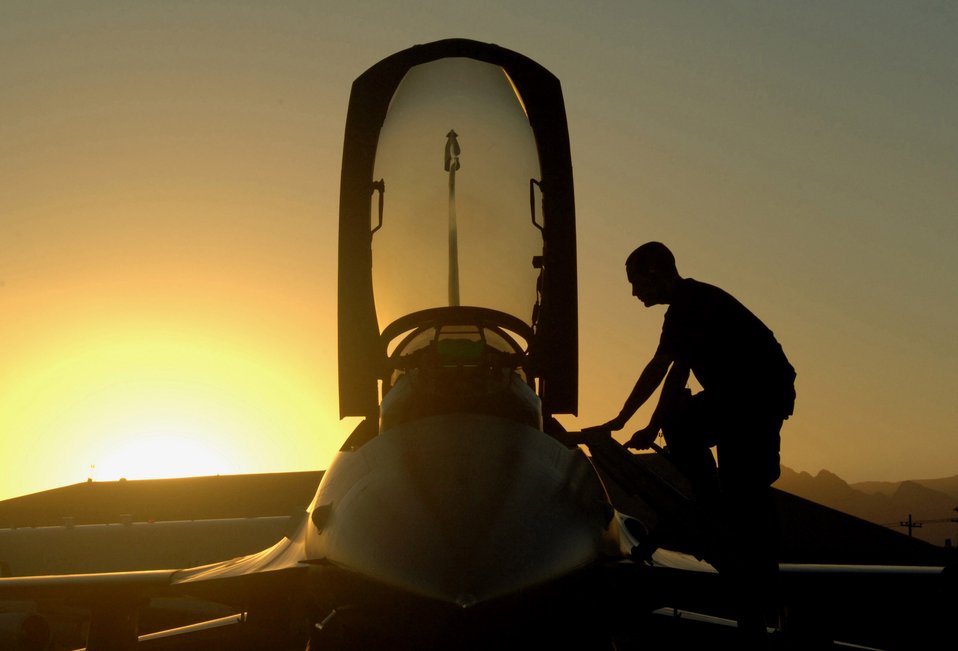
Falcons support Eagle school

Senior Airman Kyle Renbarger performs an F-16 Fighting Falcon post flight inspection Oct. 18 at Nellis Air Force Base, Nev. Airman Renbarger is a 63rd Fighter Squadron crew chief from Luke AFB, Ariz. The 63rd FS is at Nellis AFB supporting the F-15 Eagle Weapons School Instructor Course in an adversary tactics role.